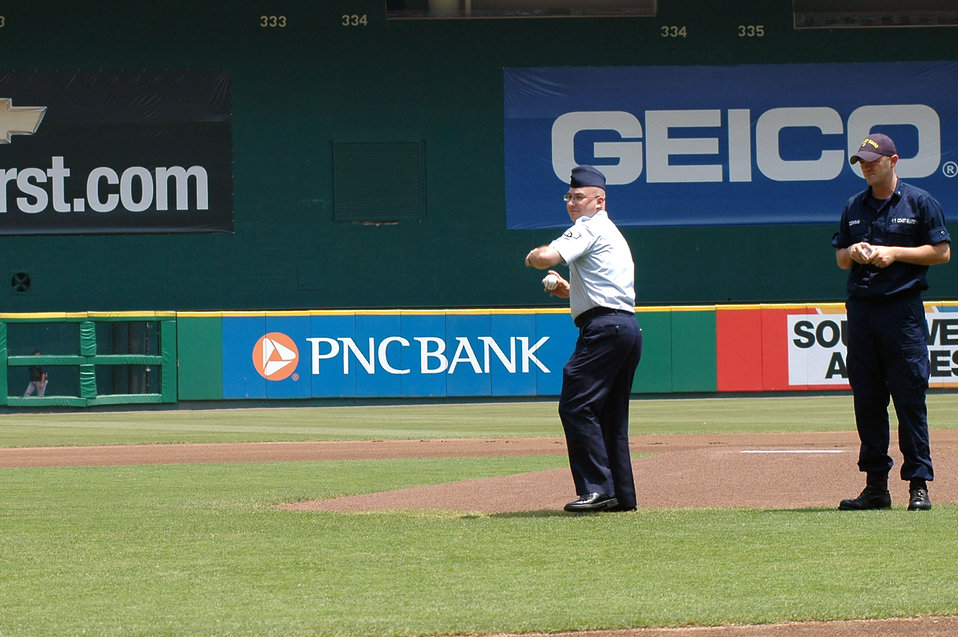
Nationals game

Senior Airman Joseph Buzanowski was one of five servicemembers given the opportunity to throw out a ceremonial